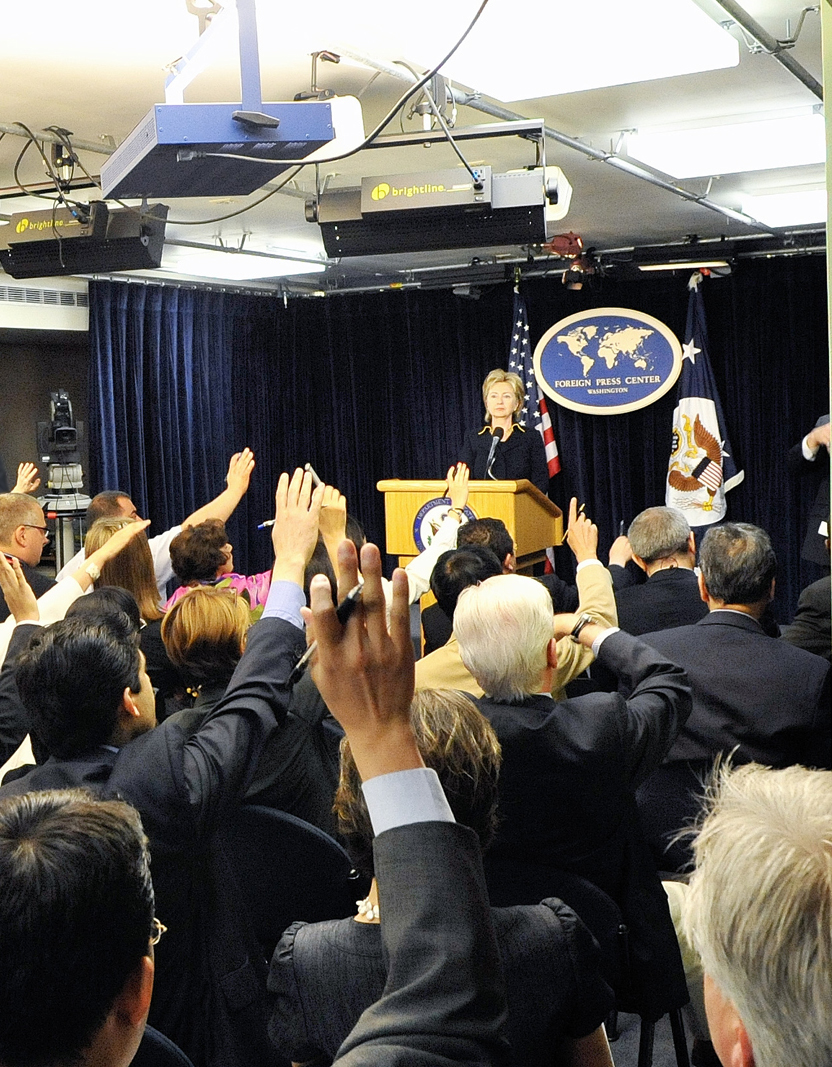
Secretary Clinton Marks Global Press Freedom Day at U.S. Foreign Press Center

U.S. Secretary of State Hillary Rodham Clinton briefs the press on U.S. commitment to global press freedom at the Foreign Press Center in Washington, DC May 19, 2009.